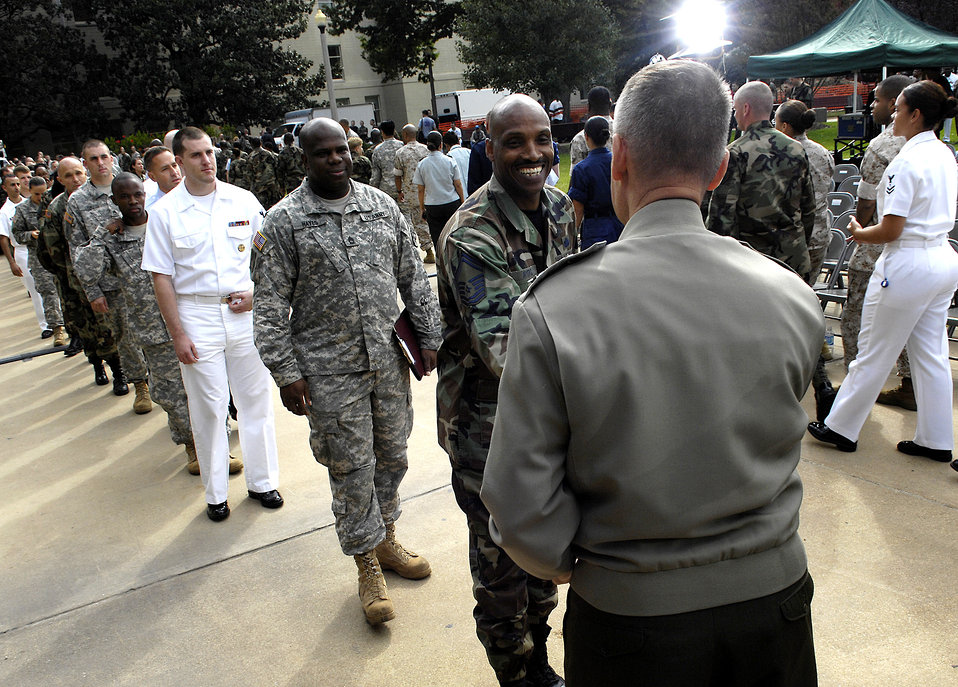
Farewell from the chairman

Marine Corps Gen. Peter Pace, chairman of the Joint Chiefs of Staff, thanks enlisted servicemembers for their dedication and hands out his coin during an enlisted call at the Pentagon Sept. 20.